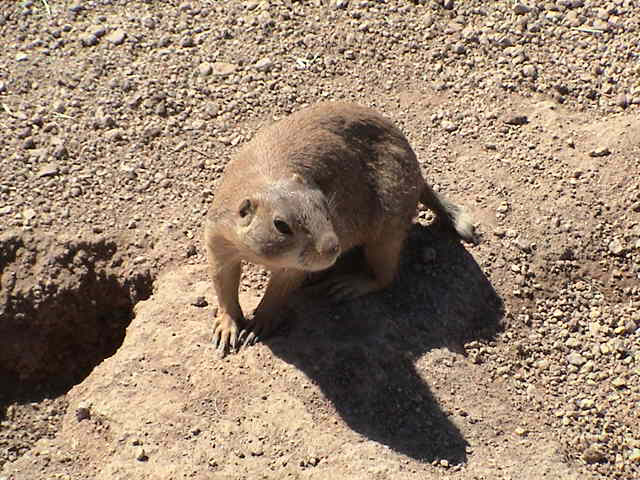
This prairie dog, a member of the genus Cynomys was photographed in New Mexico, 2003.